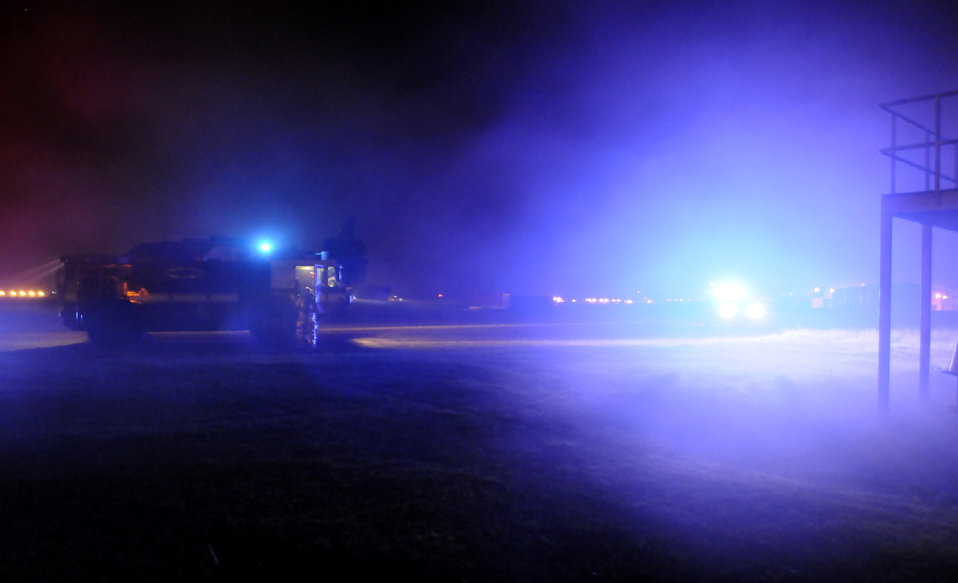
Working the night shift

Firetrucks arrive on the scene of a simulated fire as smoke fills the air July 23 at Royal Air Force Mildenhall, England. The fire scenario is part of a phase-two exercise conducted in preparation for an operational readiness inspection later this year. The firefighters are assigned to the 100th Civil Engineer Squadron.